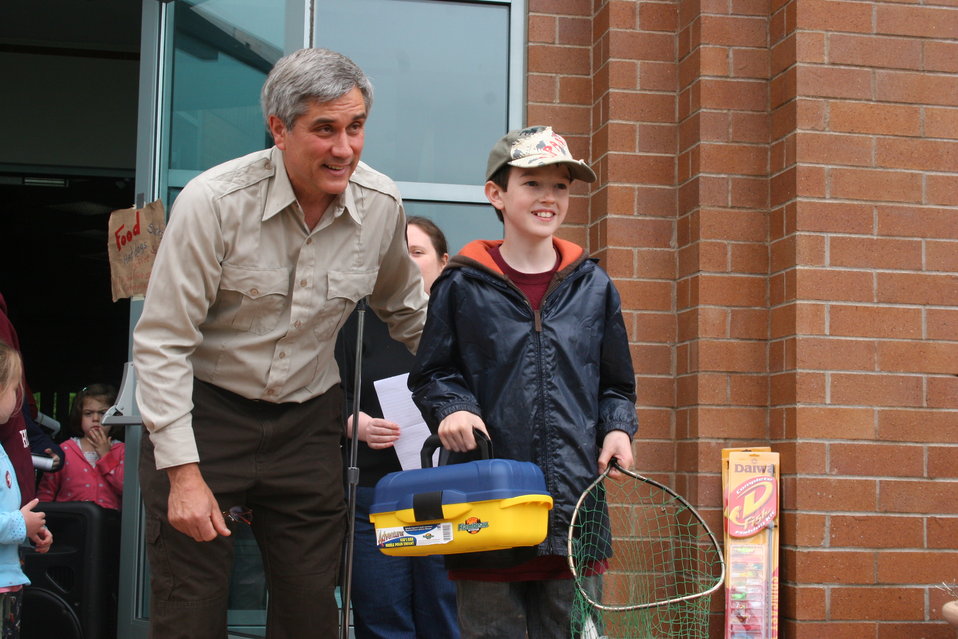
Winner

Fishing event at U.S. Fish and Wildlife Service Regional Office in Hadley, MA